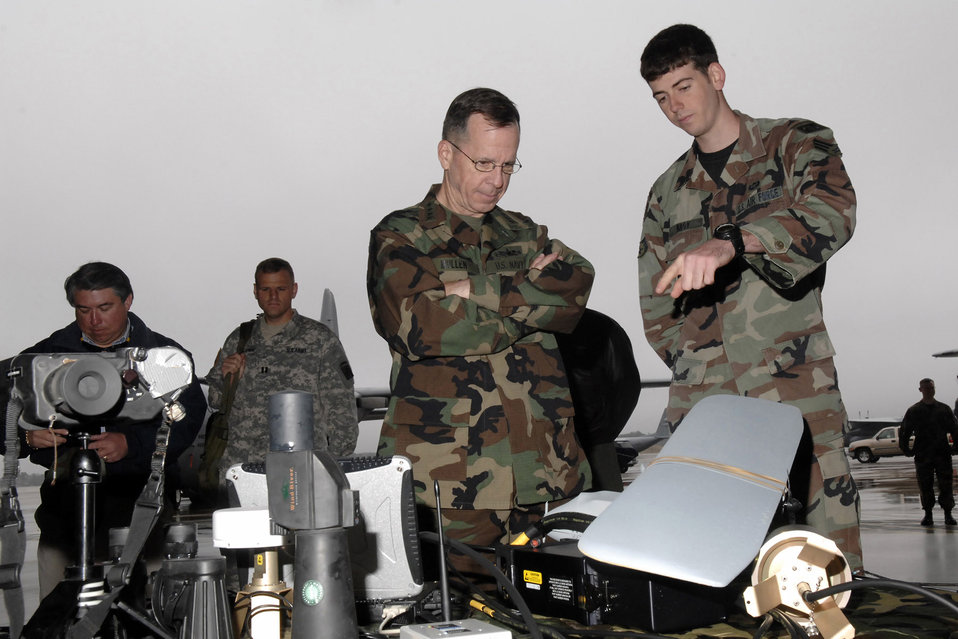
Chairman of Joint Chiefs visits Pope

Senior Airman Aaron Nagy, from the 14th Air Support Operations Squadron, shows Adm. Mike Mullen, chairman of the Joint Chiefs of Staff, some of the equipment used by a tactical air control party Airman during the admiral's tour of Pope Air Force Base, N.C., March 31. The admiral also toured nearby Fort Bragg during his visit.